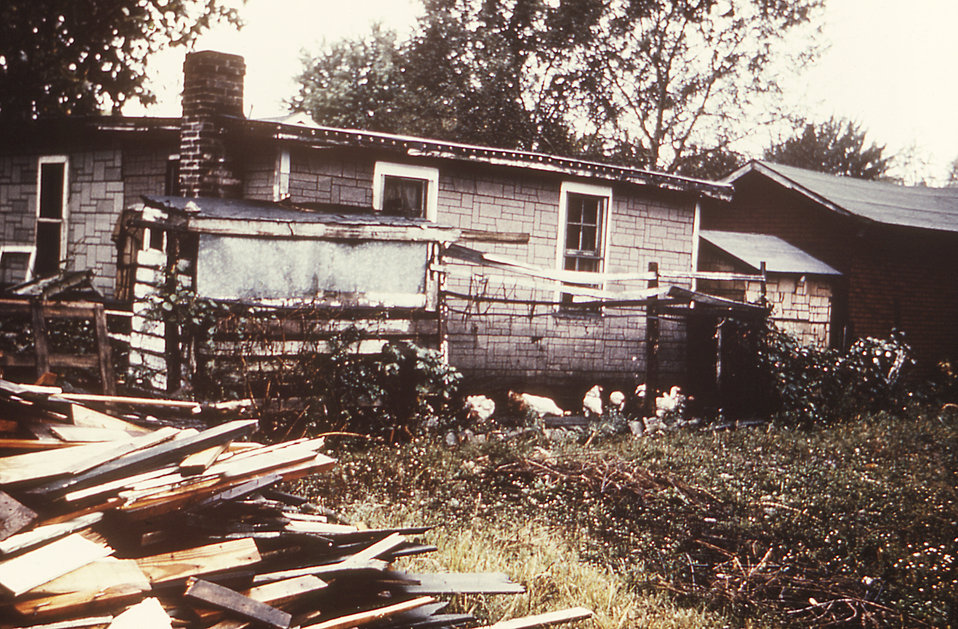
Behind this dwelling was an old chicken house, which made for an excellent 'resting station' for adult mosquitoes. You'll also note a scrap wood pile, which might have included items that could contain standing water that would also act as breeding environments for mosquitoes.